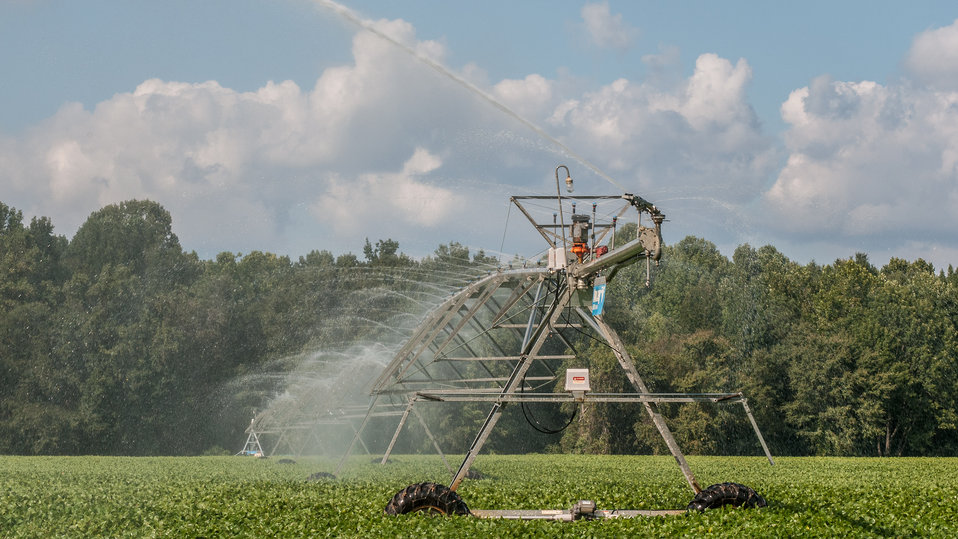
Pivot irrigation with rotating and end gun style pivot sprinkler in Hanover, Virginia, on Friday, Sept. 20, 2013.